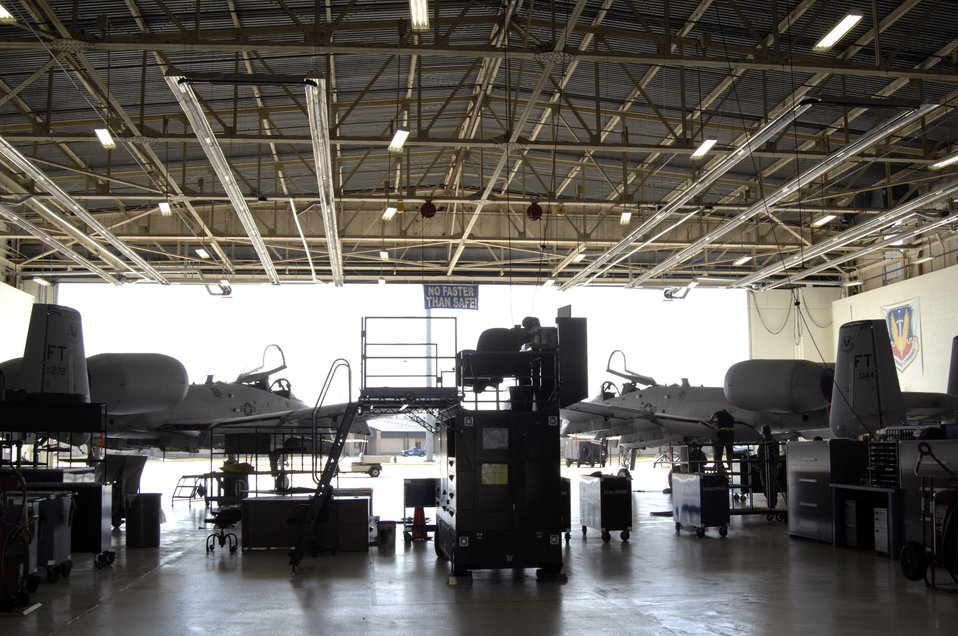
ACC maintainers expedite A-10 inspection actions

Maintainers at Moody Air Force Base, Ga., prepare to inspect an A-10 Thunderbolt II for wing frame cracks Oct. 4. A Time Compliance Technical Order was issued by Air Force Materiel Command officials identifying certain A-10s that needed to be inspected. The Airmen are assigned to the 23rd Equipment Maintenance Squadron.